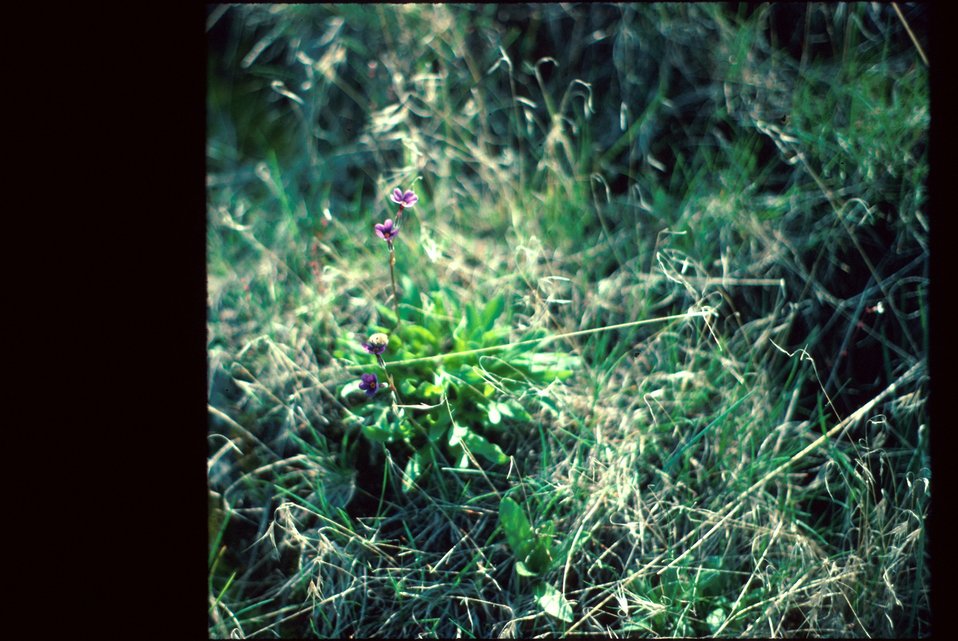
Birdsfoot trefoil Wildflower